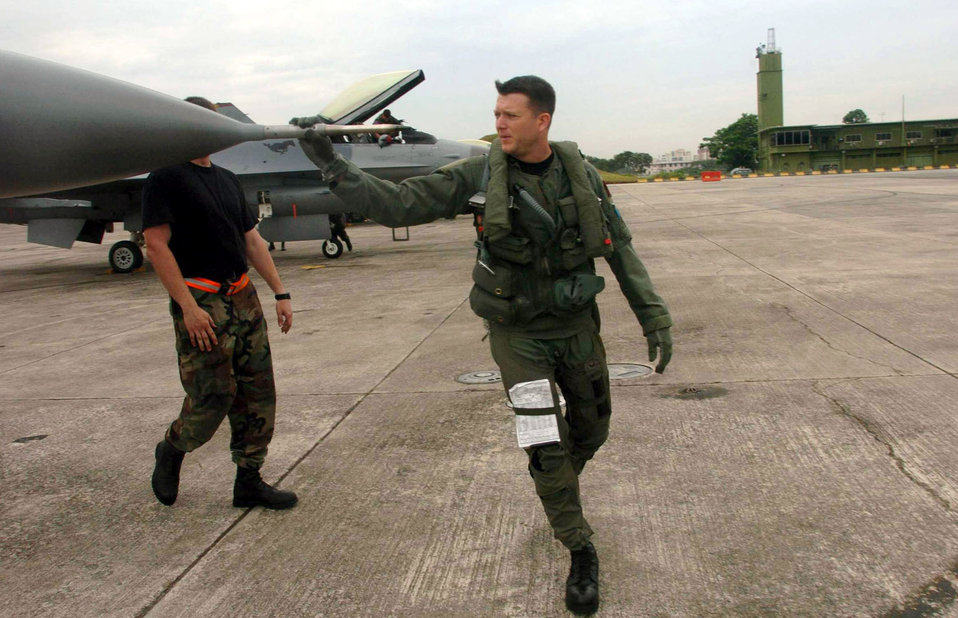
U.S., Singaporean Airmen train together

PAYA LEBAR AIR BASE, Singapore -- Maj. Mike Rose inspects his F-16 Fighting Falcon before a mission here during Commando Sling 04-3. U.S. and Singaporean Airmen trained together using realistic dissimilar aircraft air-to-air combat tactics. Major Rose is a pilot from the 36th Fighter Squadron at Osan Air Base, South Korea.